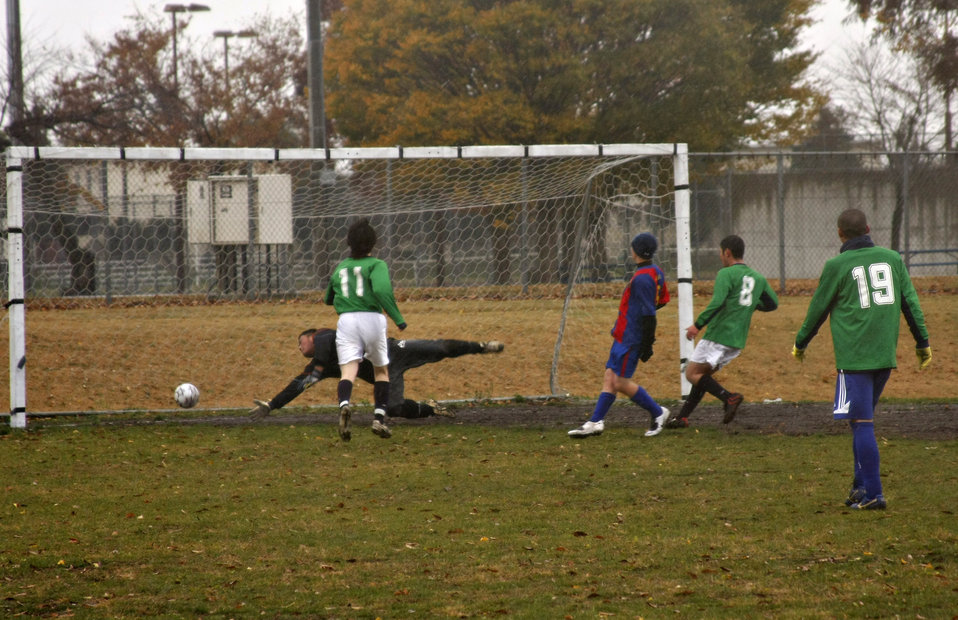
Misawa team forges international friendships on the field

Misawa United's Brandon Massi scores the winning goal during an exhibition match between the Misawa Dolphins and Misawa United Nov. 18 . Misawa United is part of an off-base league that invited the Dolphins and another team, Misawa FC, for a few friendship games.